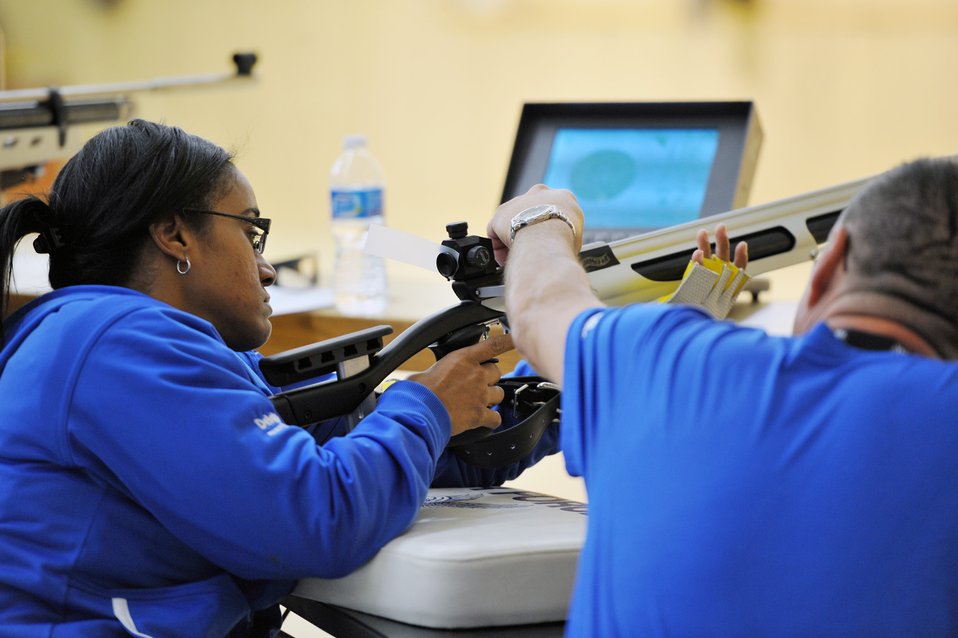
prelims shooting competition

Retired Airman First Class Chatriex Goodson is assisted by Retired
Senior Master Sgt. Noel Sepulveda before taking aim in the shooting
competition of the inaugural Warrior Games at the U.S. Olympic
Training Center in Colorado Springs, Colo., May 17, 2011. Some 200
wounded warriors and disabled veterans from all the military services
are competing in paralympic-style athletic events May 16-21.